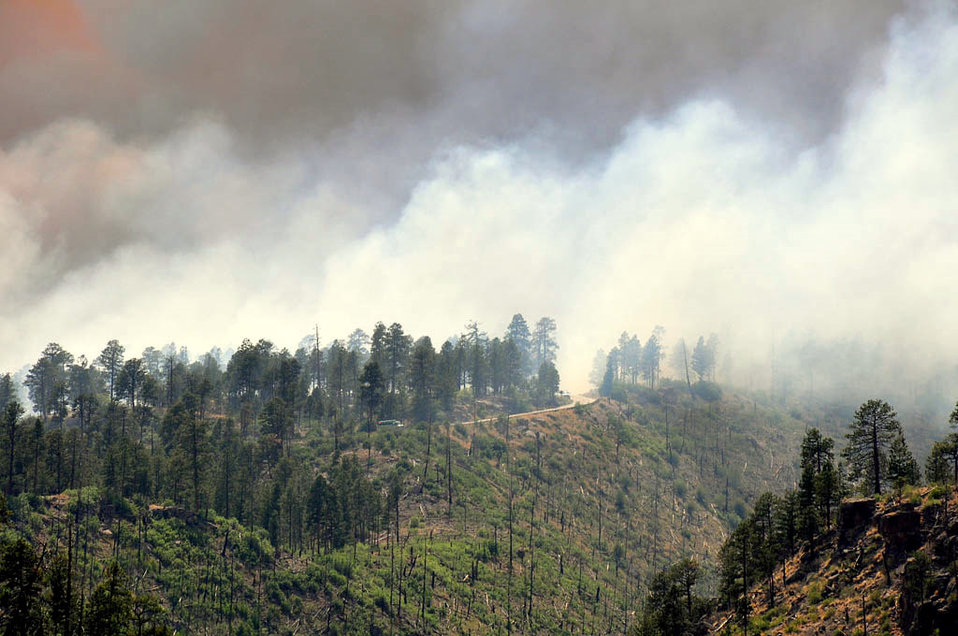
The battle to save Los Alamos Canyon.

The Las Conchas Fire started on June 26, 2011, it was caused by a fallen tree that caught fire after it came in contact with power lines nearby. The fire had burned over 121,000 acres, including 63 residences. At no time were hazardous materials in danger at Los Alamos National Laboratory. The lab was closed for a week and reopened on July 6th.